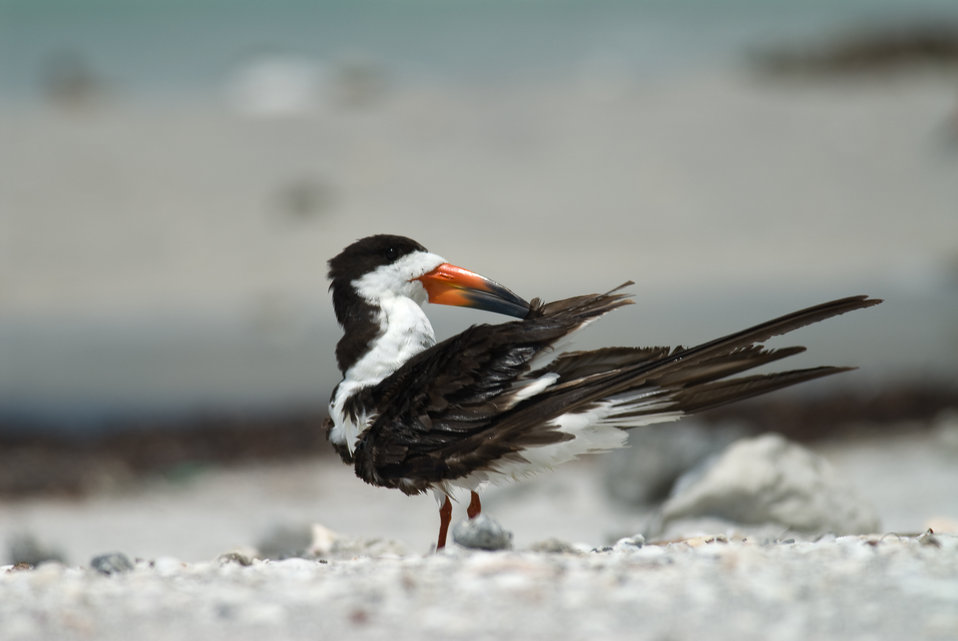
Black Skimmer

A black skimmers preens its feathers.